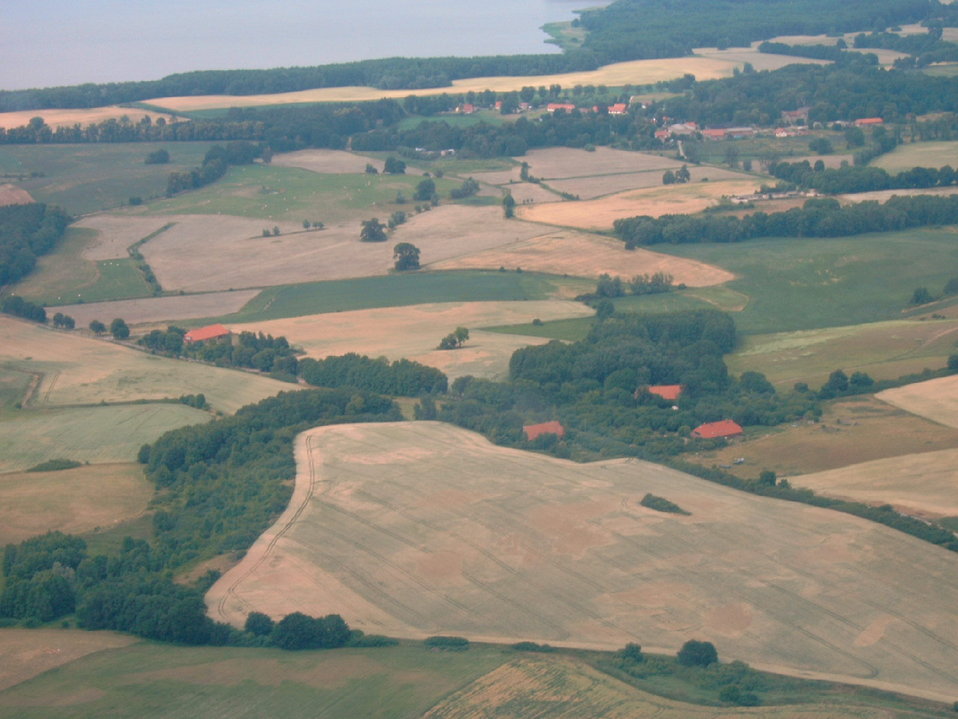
Deutsch: Der Blick auf Dahmen Ortsteil Rothenmoor mit Malchiner See und dem Schlehenberg